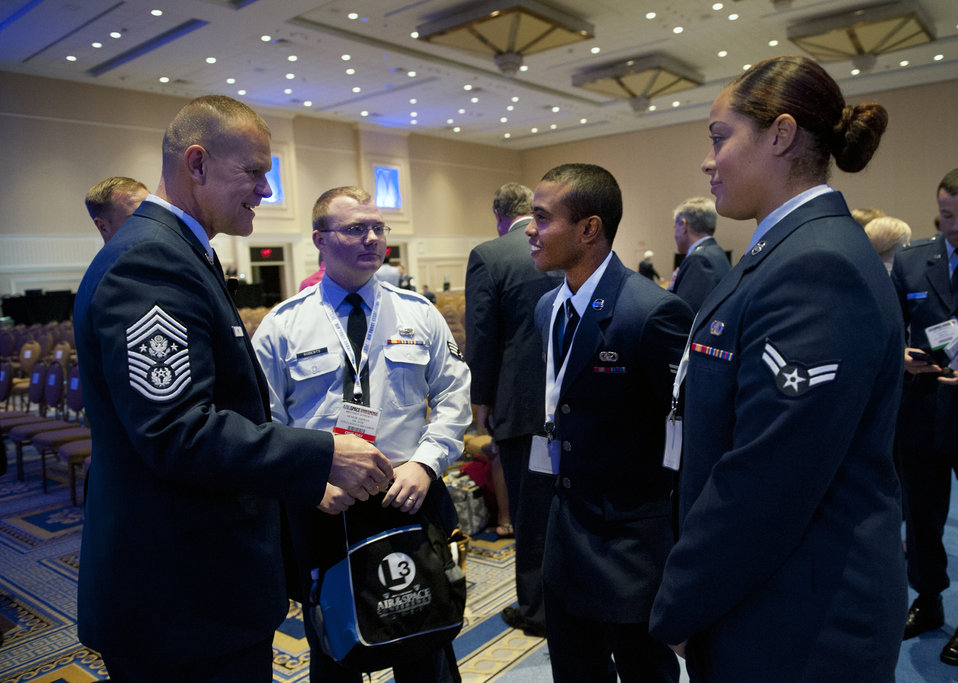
Chief Master Sgt. of the Air Force James A. Roy, left, speaks to Airmen during the enlisted call of the Air Force Association's Air and Space Conference and Technology Exposition in Washington, Sept. 19, 2012.